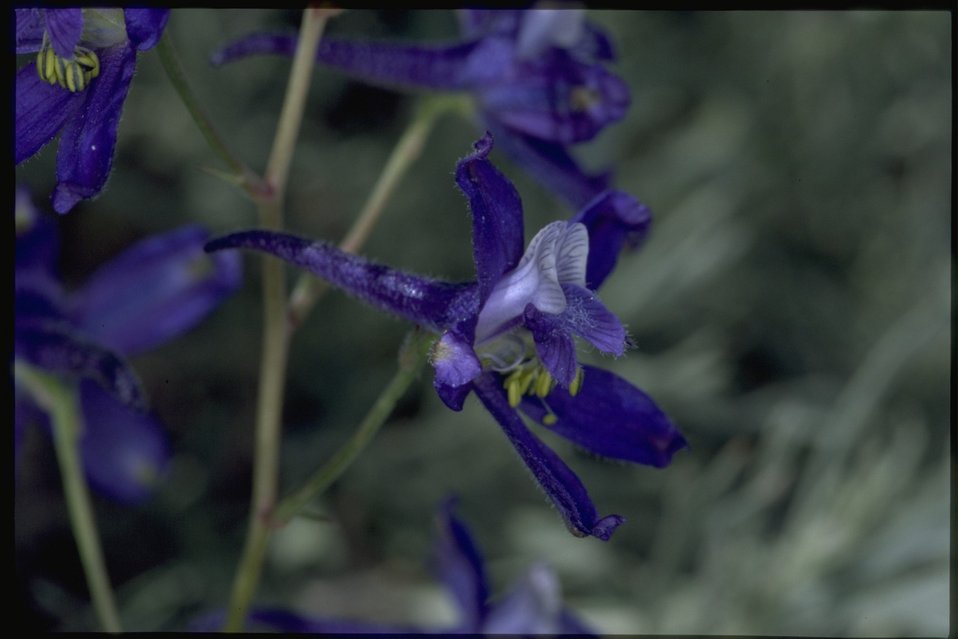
Closeup shot of Delphinium.